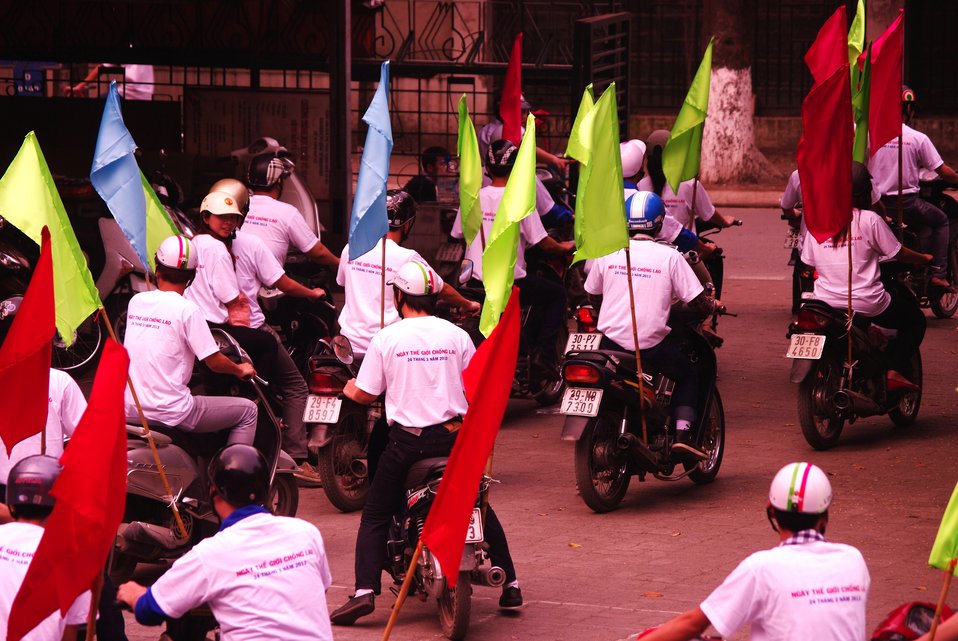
World TB Day in Hanoi: Students take to the streets with the message: Let's Stop TB in our Lifetime

March 23, 2013